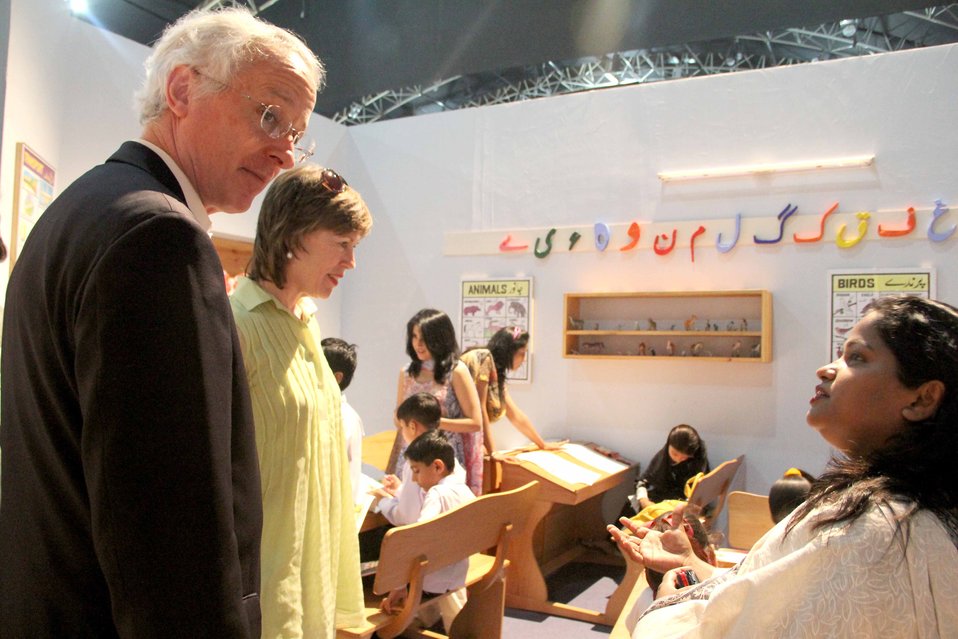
U.S. Ambassador’s Visit to Sim Sim Hamara Highlights U.S. Commitment to Improved Children’s Education in Pakistan at Lahore on 28 April, 2012

Us Official with Cameron Munter and his wife Marliy wyatt in the class room set